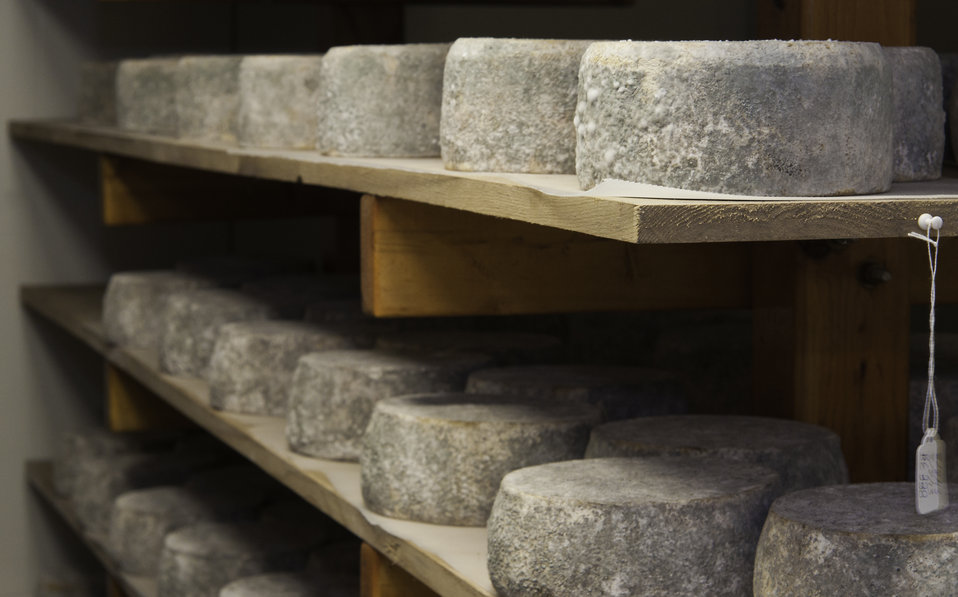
Cheese rounds that have been inoculated with mold cure in the aging room to produce Chapel’s Country Creamery, “Bay Blue” cheese. The dairy produces hand crafted artisanal cheeses with fresh raw milk produced on the dairy’s Grade A dairy farm in Easton, MD. The dairy’s grass fed Jersey and Holstein cows produce high quality milk, rich in cream. The milk is all- natural and contains no synthetic hormones, antibiotics, or chemical compounds. They mentioned that by producing our own cheese from start to finish, we insure the highest quality possible.